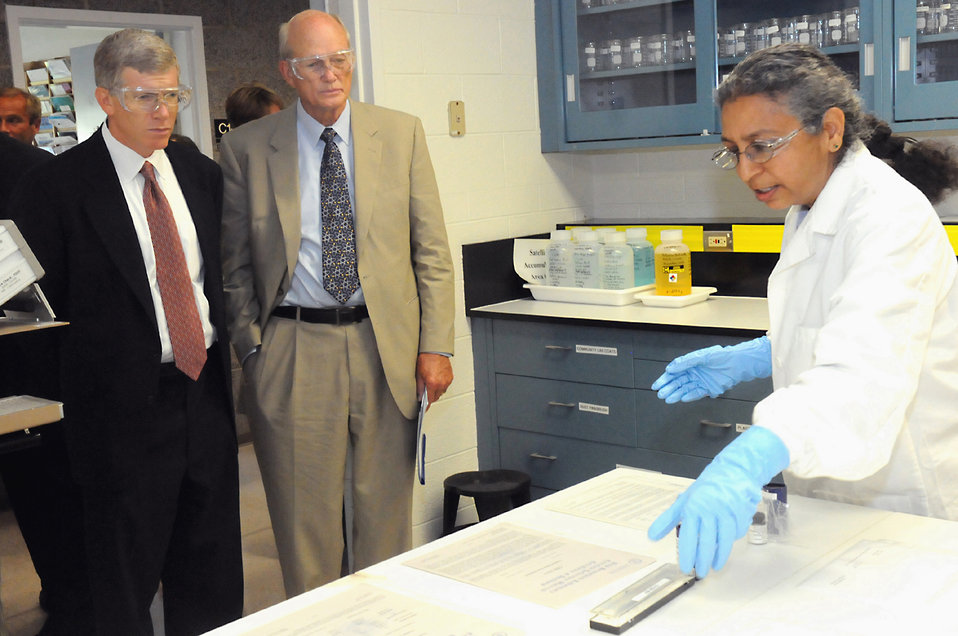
DEPUTY SECRETARY PONEMAN AND BILL BRINKMAN, DIRECTOR, OFFICE OF SCIENCE, VISIT THE NEW BRUNSWICK LABORATORY.

NBL is located on the site of Argonne National Laboratory, about 25 miles southwest of Chicago, Illinois. The lab is part of the Department of Energy's Office of Science Chicago Office.